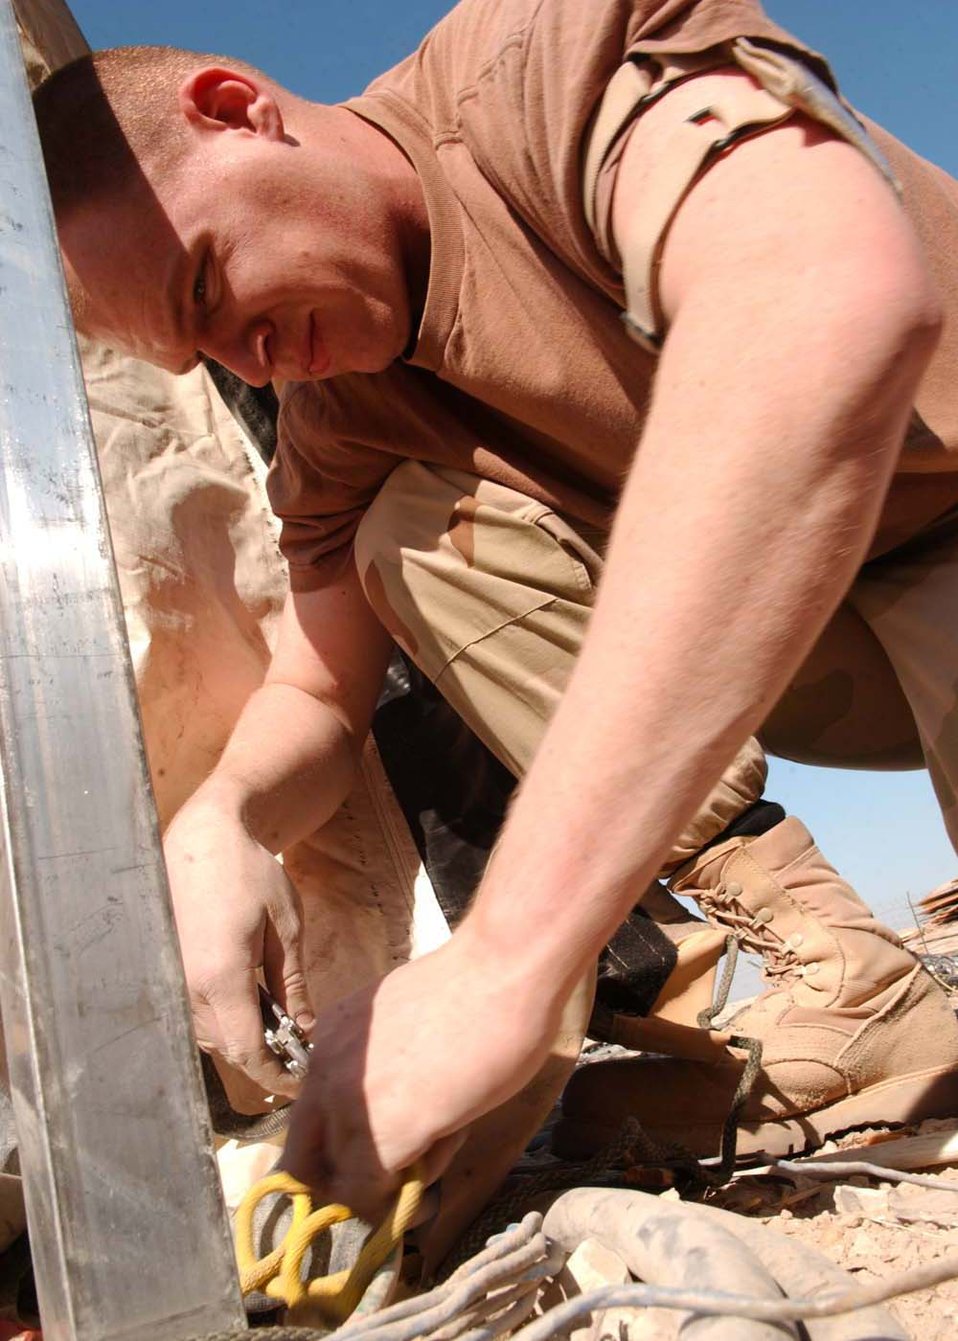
C-130 maintenance unit gets much needed upgrade

Senior Airman Michael Duda breaks down one of the three tents that originally made up